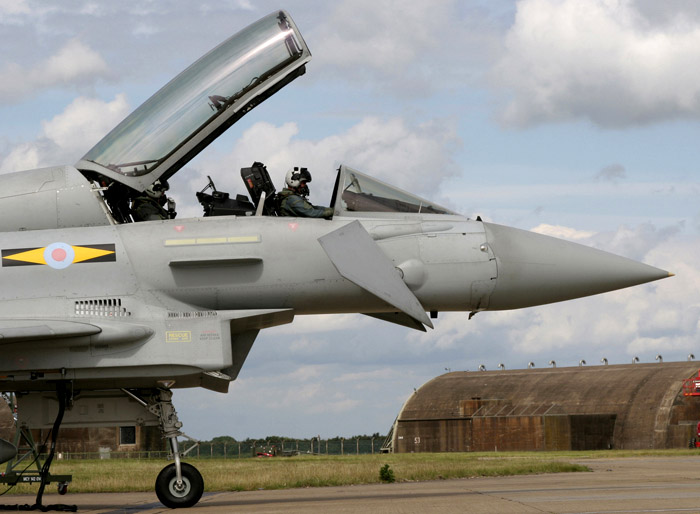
Pilot tackles Typhoons during exchange duty in England

Maj. Paul Carlton straps himself into an F-2 Typhoon June 16 at Royal Air Force Coningsby, England. Major Carlton is an F-16 Fighting Falcon pilot on an exchange program.